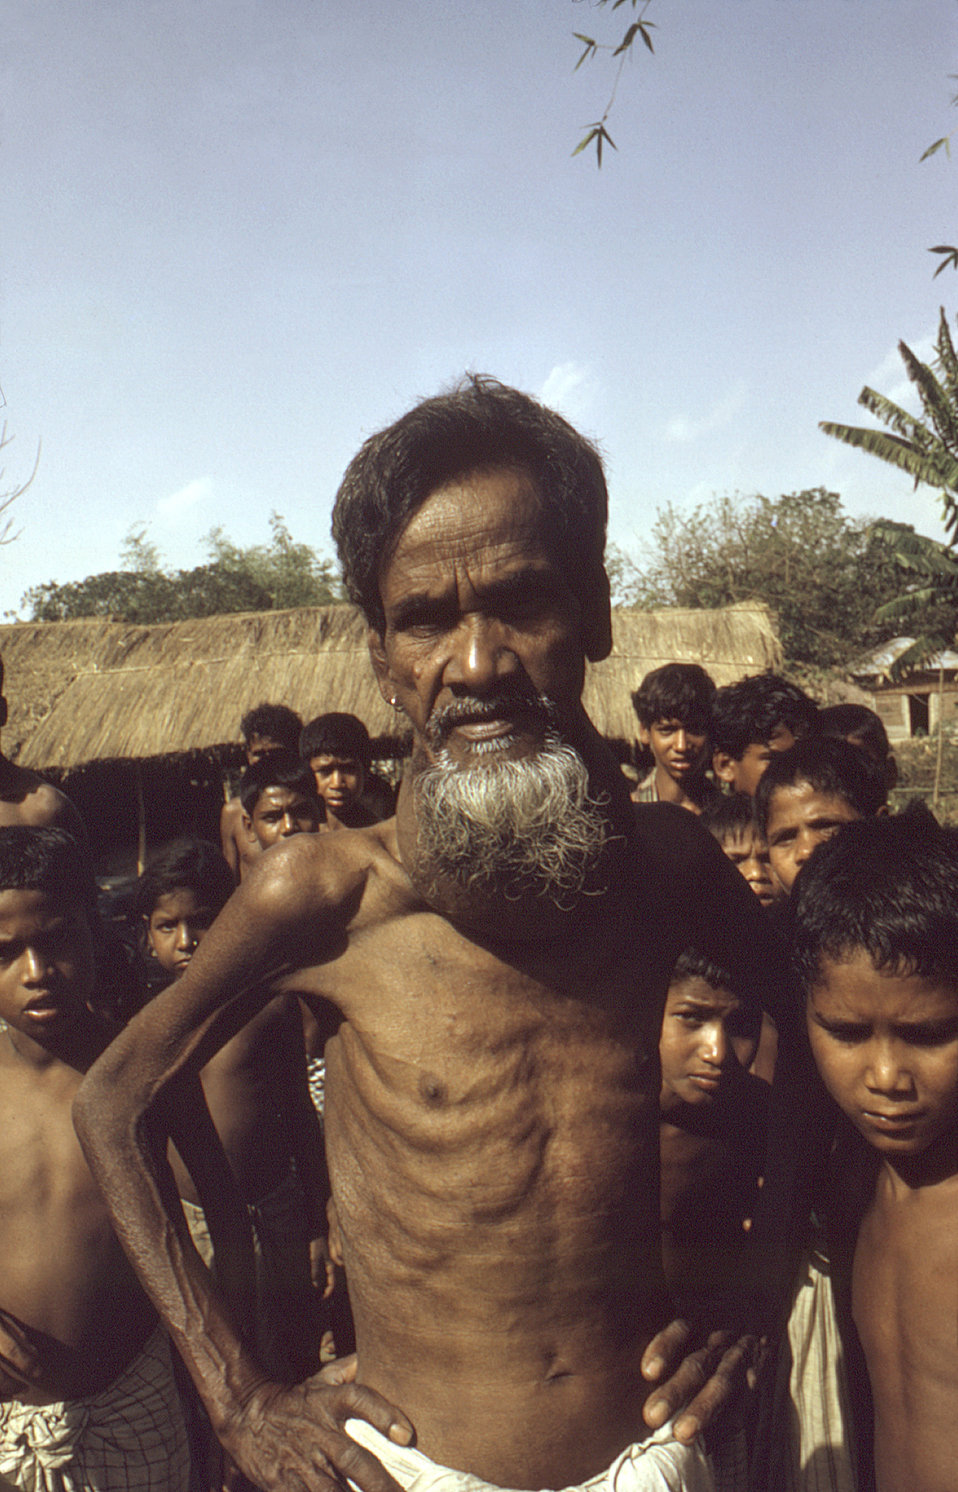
This 1974 photograph depicted an elderly Bengali man standing in front of a number of children in a Bangladesh village. The man displayed a large goiter, and was quite thin, both conditions most probably due to his poor diet, which was low in dietary iodine. This image was captured during the worldwide smallpox eradication program, by a member of the Bangladesh eradication team while in that region.